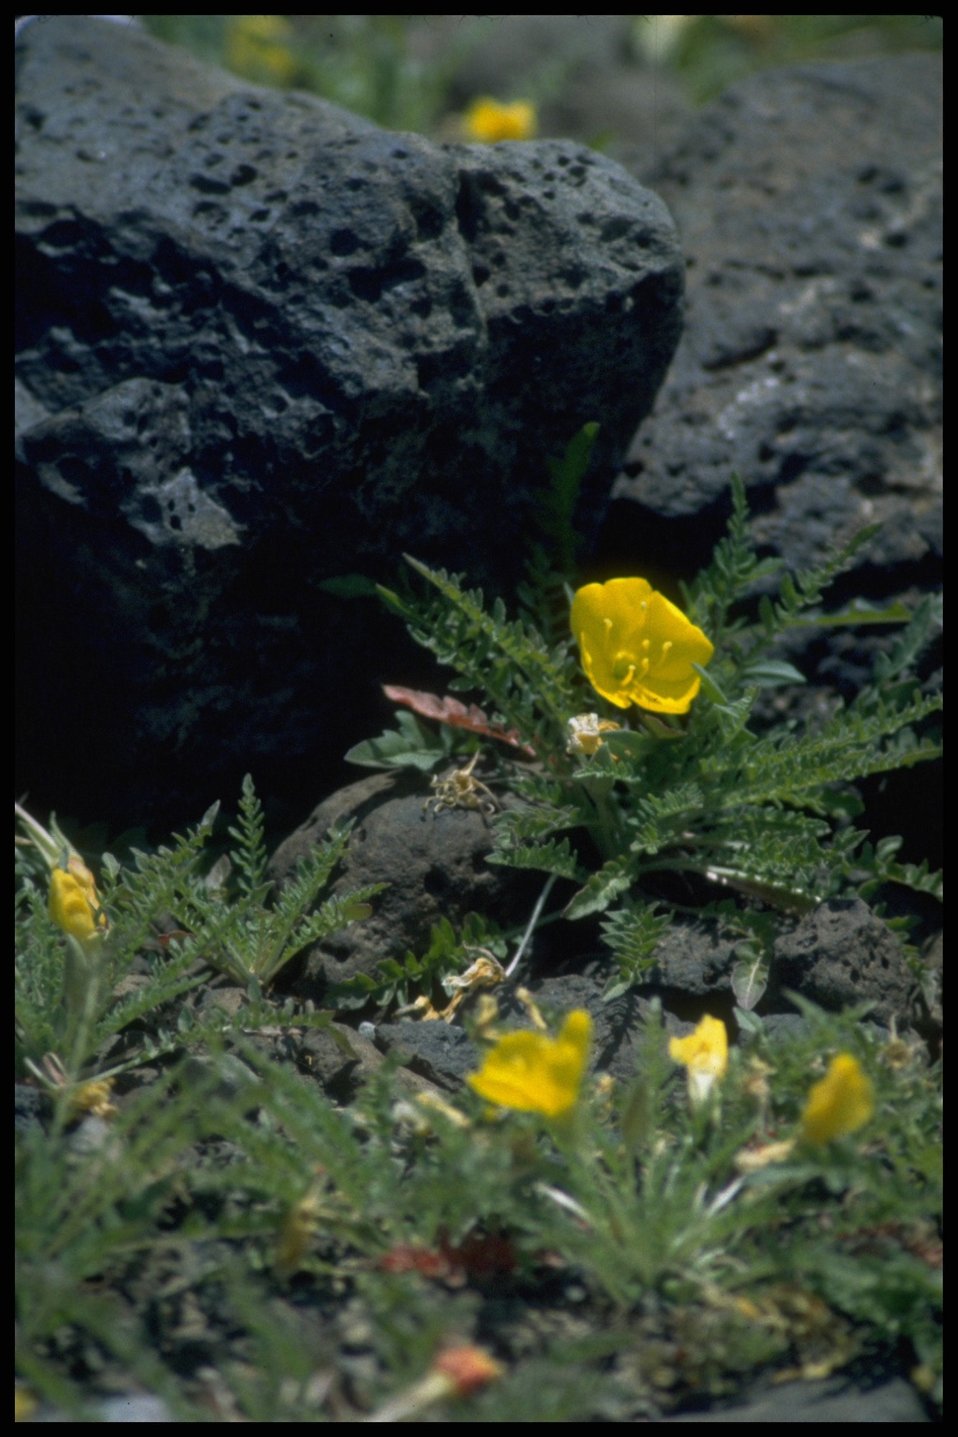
Medium shot of Sun Cup wildflower, Lakeview District.